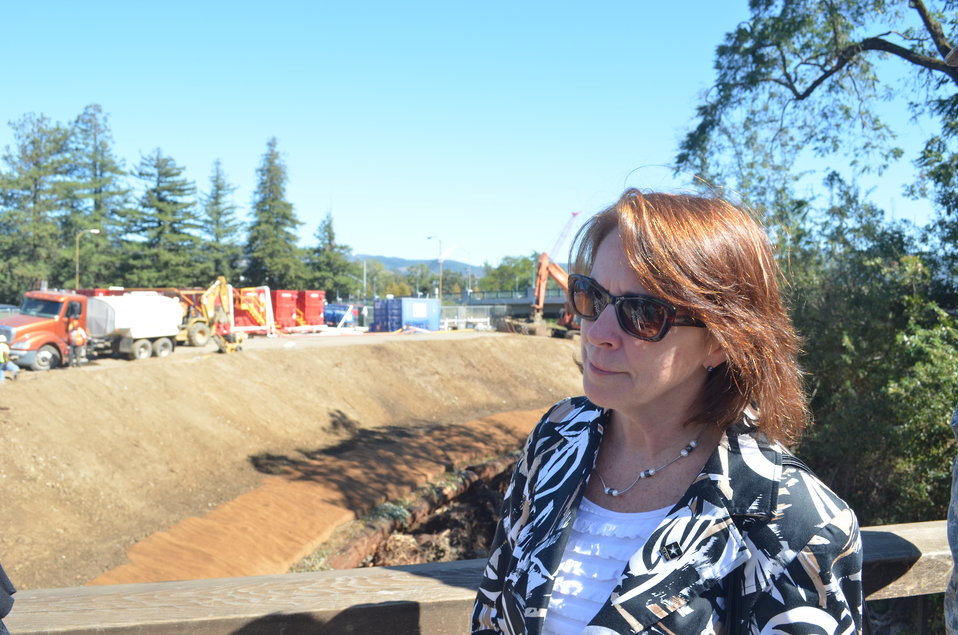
Tour of Napa flood risk reduction efforts

Assistant Secretary of the Army (Civil Works) Jo-Ellen Darcy gets an up-close look at the construction in Napa Creek. (US Army Corps of Engineers/DeDe Cordell)